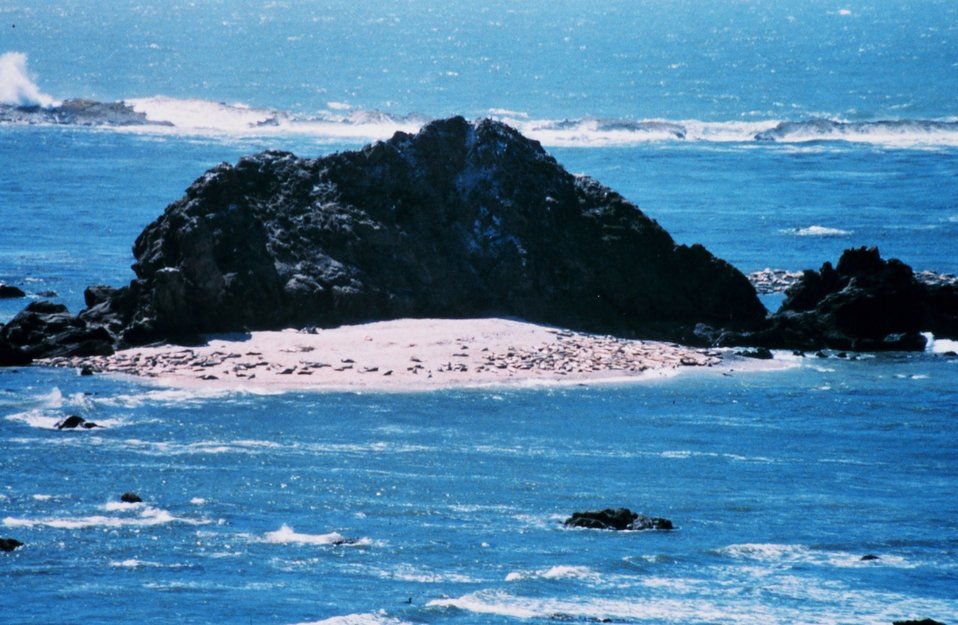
Sea lions basking on the beach at Strawberry Hill.